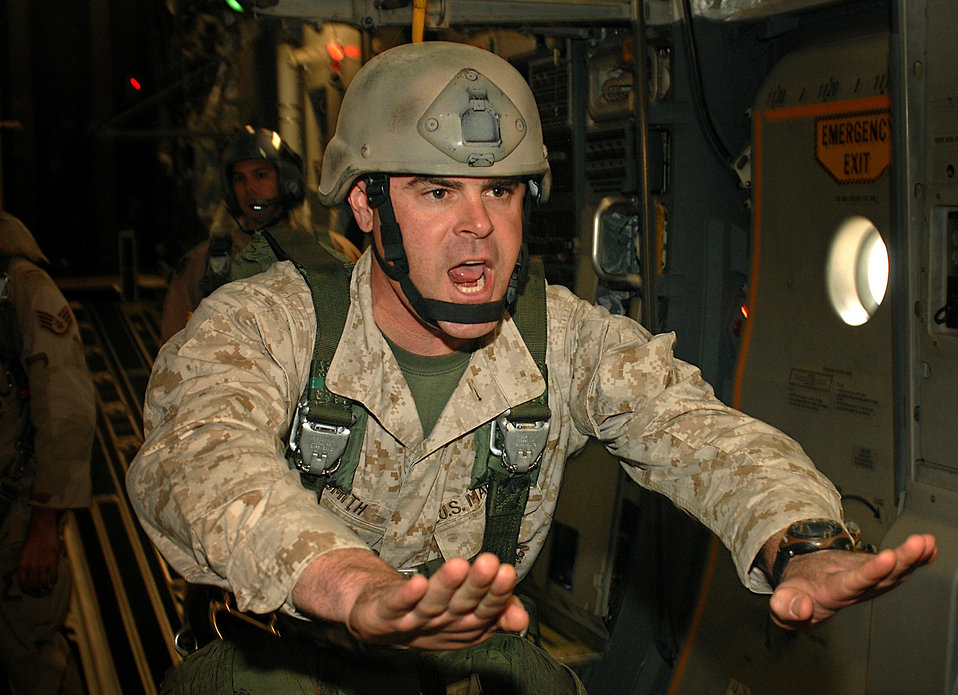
Exercise Bright Star 2007

Marine Corps Gunnery Sgt. Nathan Smith prepares to jump from a Charleston Air Force Base, S.C., C-17 Gloemeater III aircraft into Cairo, Egypt, Nov. 10 as part of Exercise Bright Star 2007.